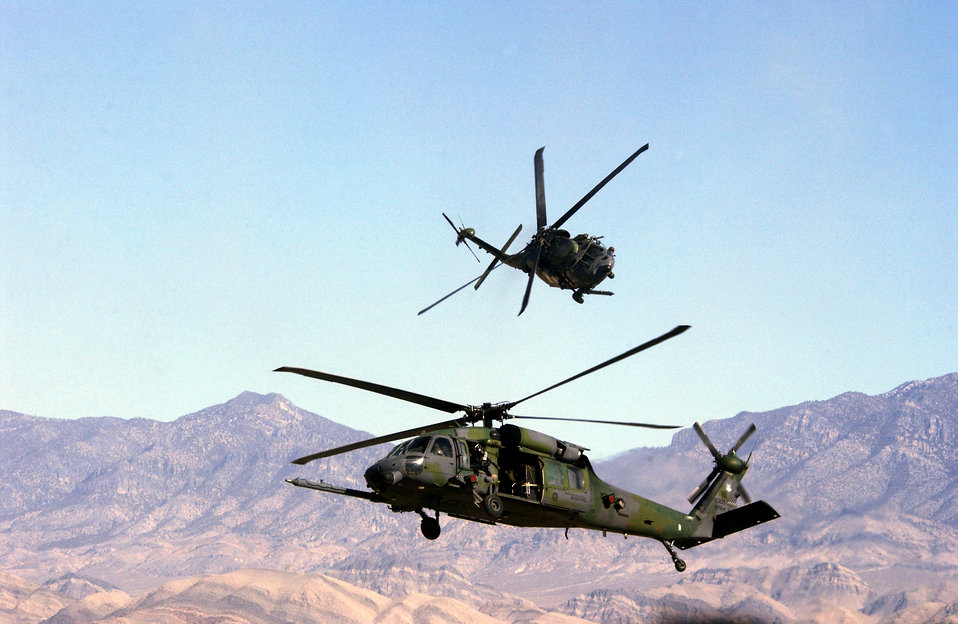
Hey folks, watch this!

NELLIS AIR FORCE BASE, Nev. -- Two HH-60 Pave Hawk helicopters from the 66th Rescue Squadron here provide aerial cover for pararescuemen that are already on the ground attempting a simulated rescue of a downed pilot. The simulation was part of a quarterly firepower demonstration which shows off the Air Forces' full array of warfighting capabilities.